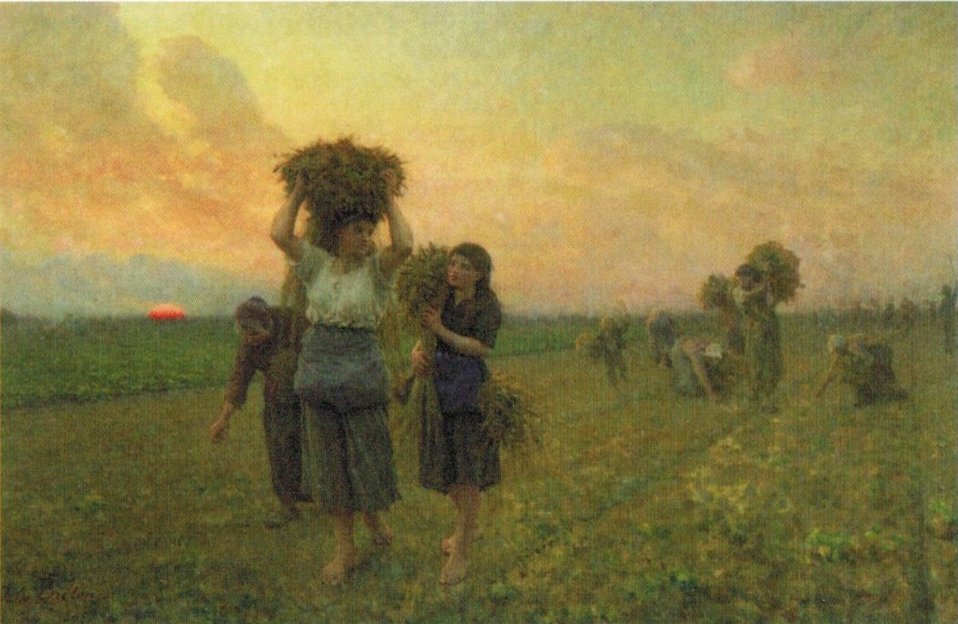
'The Last Gleanings', oil on canvas painting by Jules-Adolphe Breton, 1895, Huntington Library